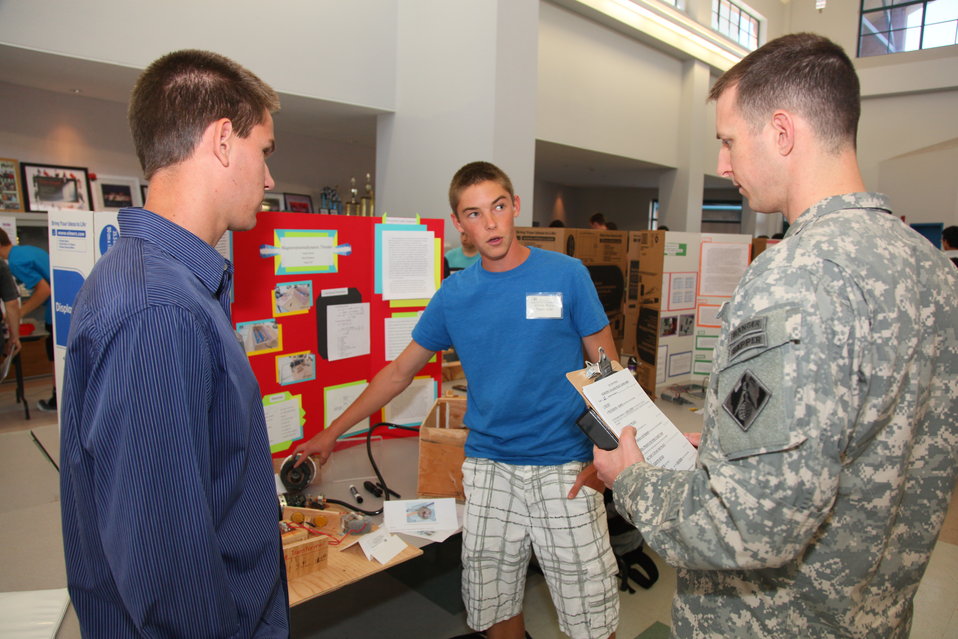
Corps of Engineers judge science projects at the 5th Annual Folsom High School Physics and Engineering Challenge.

Major Robert Dion (right) listens to Folsom High’s Vinnie Morin (center) explain his physics project on magnets at a physics and engineering event at Folsom High in Folsom, Calif., May 18. Dion was one of two judges from the U.S. Army Corps of Engineers Sacramento District’s engineering division that participated in the 5th Annual Folsom High School Physics and Engineering Challenge. The students displayed various rocket, solar, hover, catapult, air compression, electric, magnetic and light-bending projects with detailed narratives of their experience for the judges.